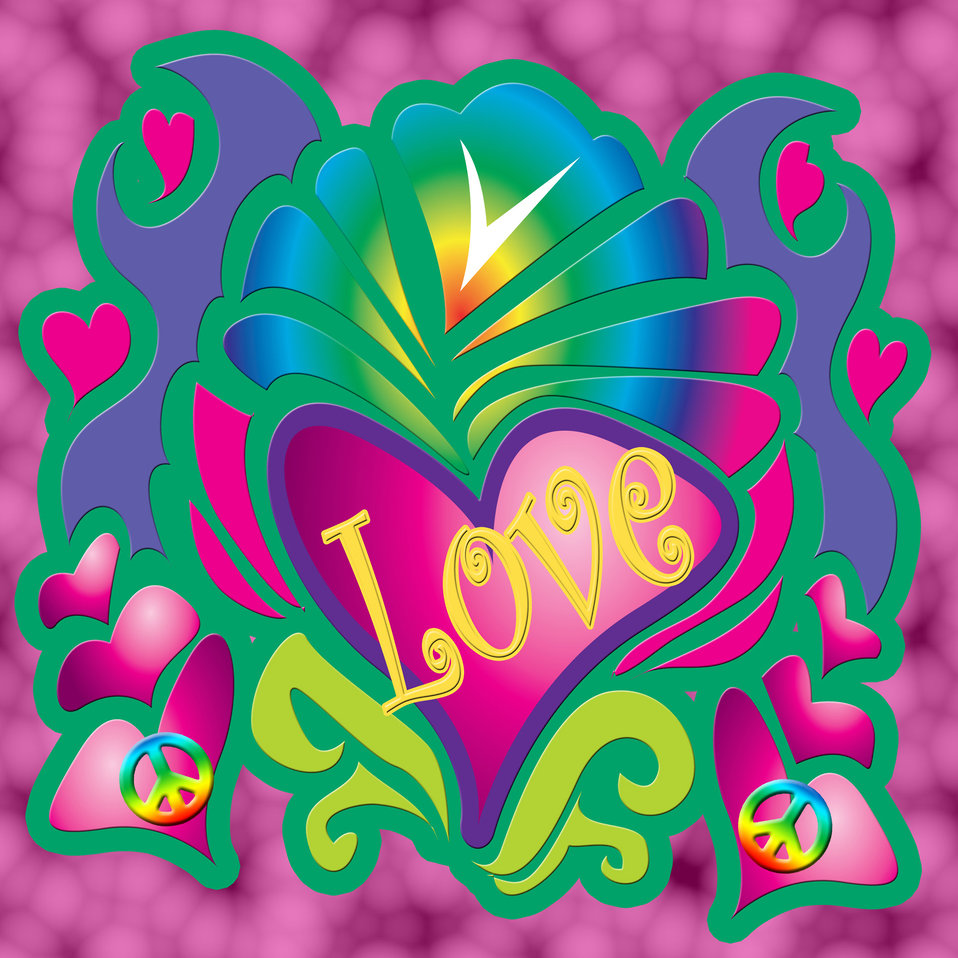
Love 70's style

Brightly colored illustration of 1970's style love with peace signs..